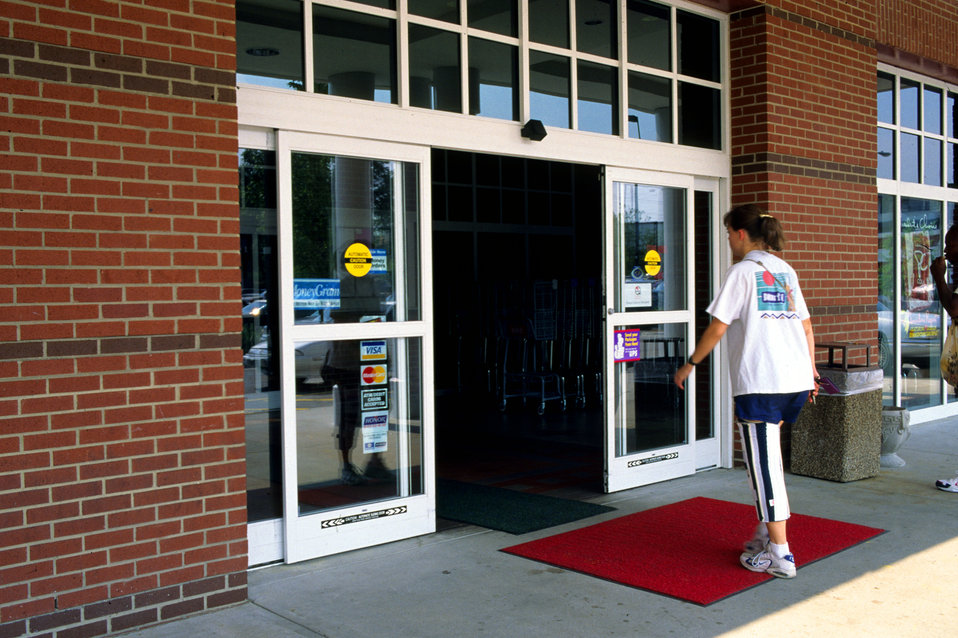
In this 1996 image, a woman who was wearing a leg brace, which reduced mobility of her left knee, was about to enter a grocery store through its automatic, electronic eye-controlled doorway. Being that the doors were automatic, it reduced the amount of effort needed by all who'd enter the doorway, which included those experiencing reduced mobility such as this woman with an impaired gait. Widely used, 'no-touch' automatic doors accommodate all types of users, including the mobility-challenged, as well as those whose hands are filled with purchases. Simple, and in common use, the wide automatic door is an excellent example of Universal Design. Other facilities should, where possible, consider this option.